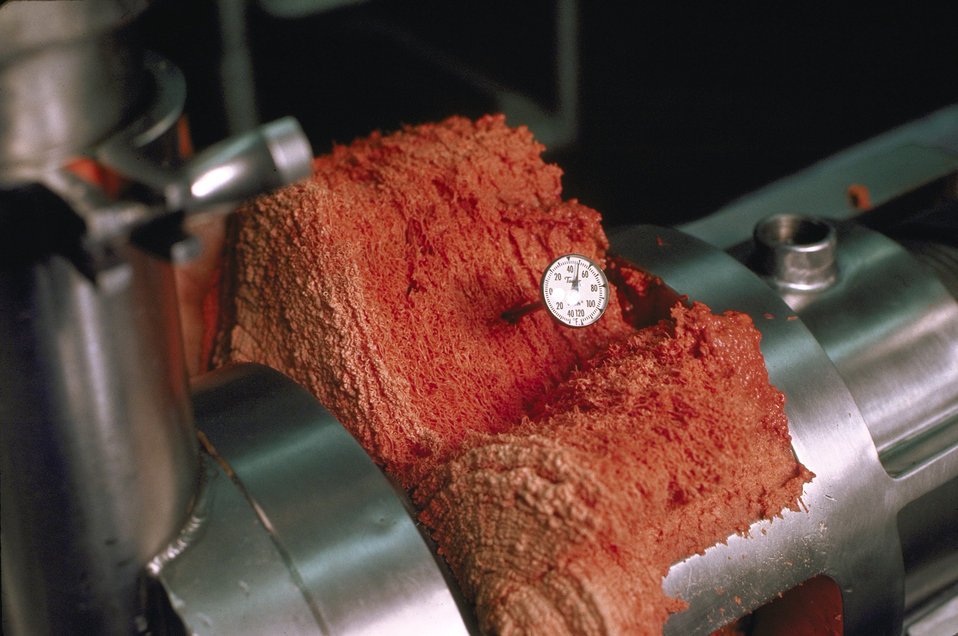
The U.S. Department of Agriculture (USDA) announced on January 26, 1998 that it was going to require meat and poultry processing plants to have a science-based Hazard Analysis and Critical Control Points (HACCP) food inspection system put into place. HACCP is a food production, storage, and distribution monitoring system for identification and control of associated health hazards using definitive scientific tests. Its purpose is to prevent contamination of food products during processing.